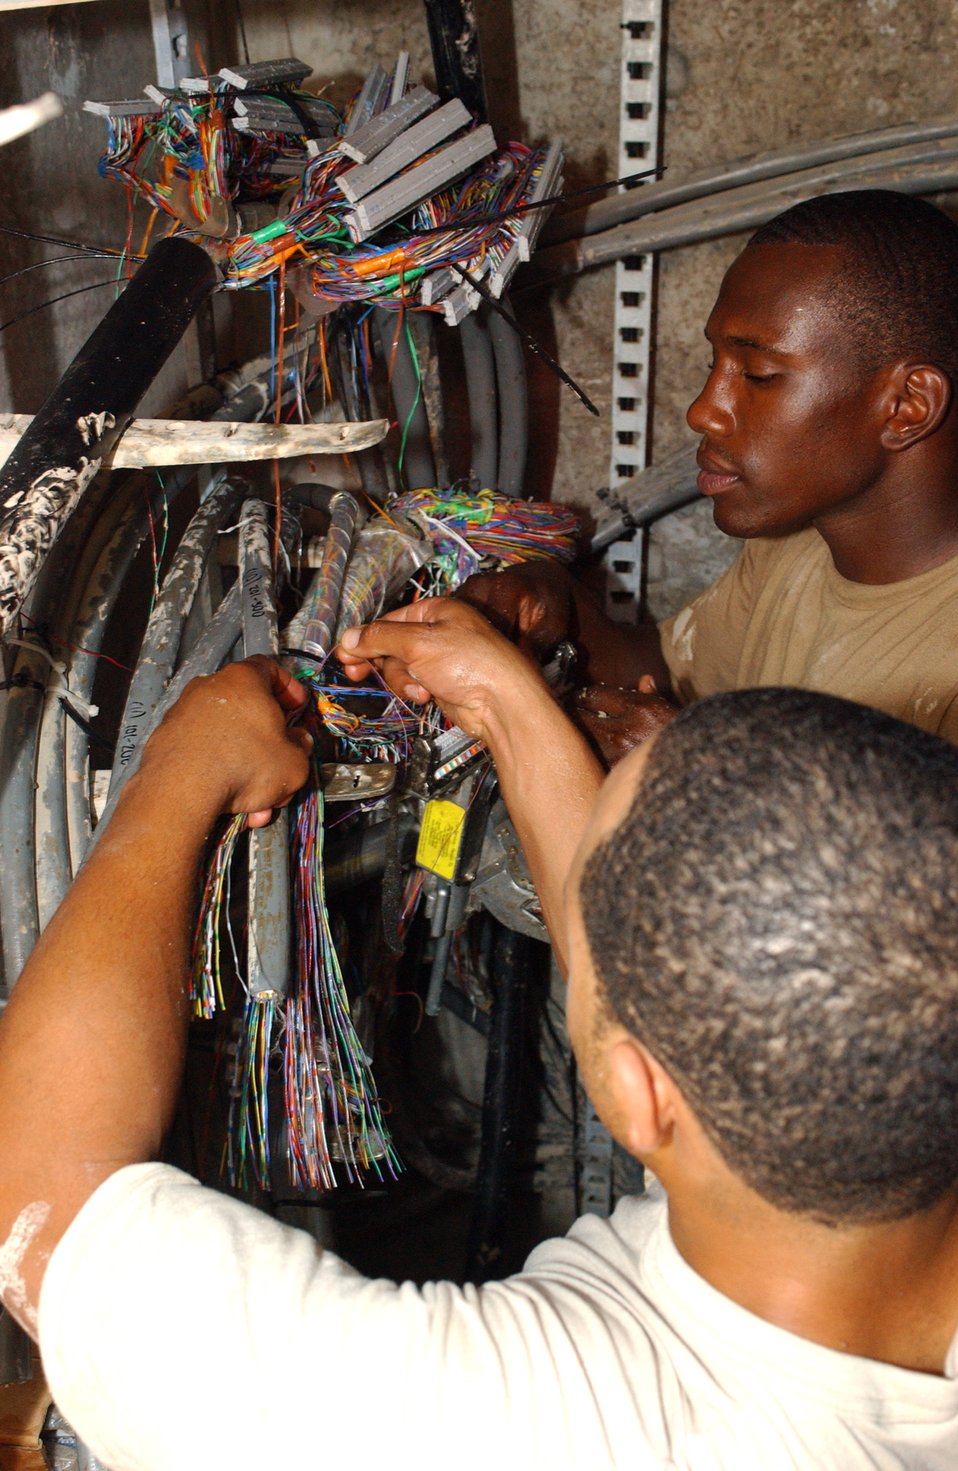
Connecting the world one wire at a time

Staff Sgt. Benjamin Puryear (front) and Senior Airman Jonathan Williams splice copper cables at Ali Base, Iraq, on Friday, May 5, 2006. They are with the 407th Expeditionary Communications Squadron's base information infrastructure shop. Sergeant Puryear is deployed from Andrews Air Force Base, Md., and Airman Williams is deployed from F.E. Warren AFB, Wyo.